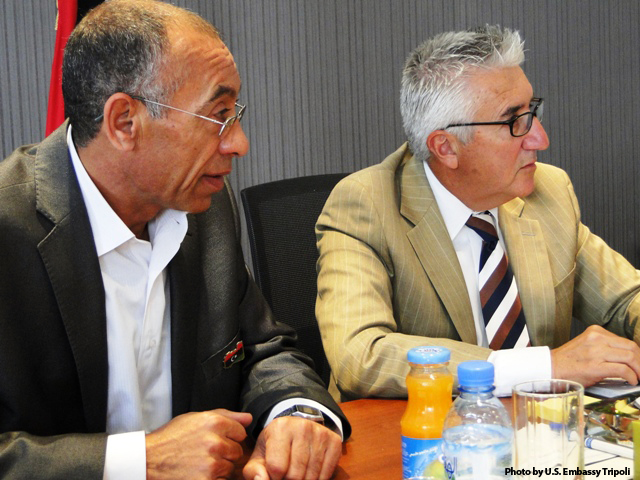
Ambassador Cretz Meets With Misurata Local Council Chairman Zwawi

U.S. Ambassador to Libya Gene Cretz meets with Misurata Local Council Chairman Khalifa Zwawi in Misurata, Libya, on November 26, 2011.